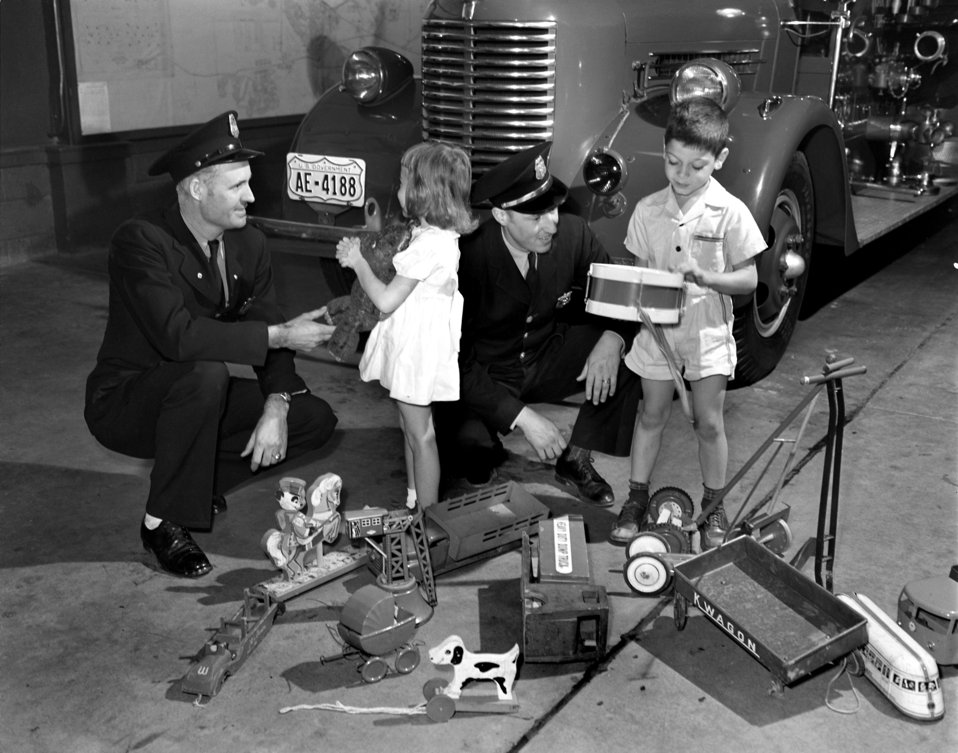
Christmas Toys To Be Fixed By Firemen Oak Ridge 1947

3906-2 DOE photo Ed Westcott 11-14-1947 Oak Ridge Tennessee